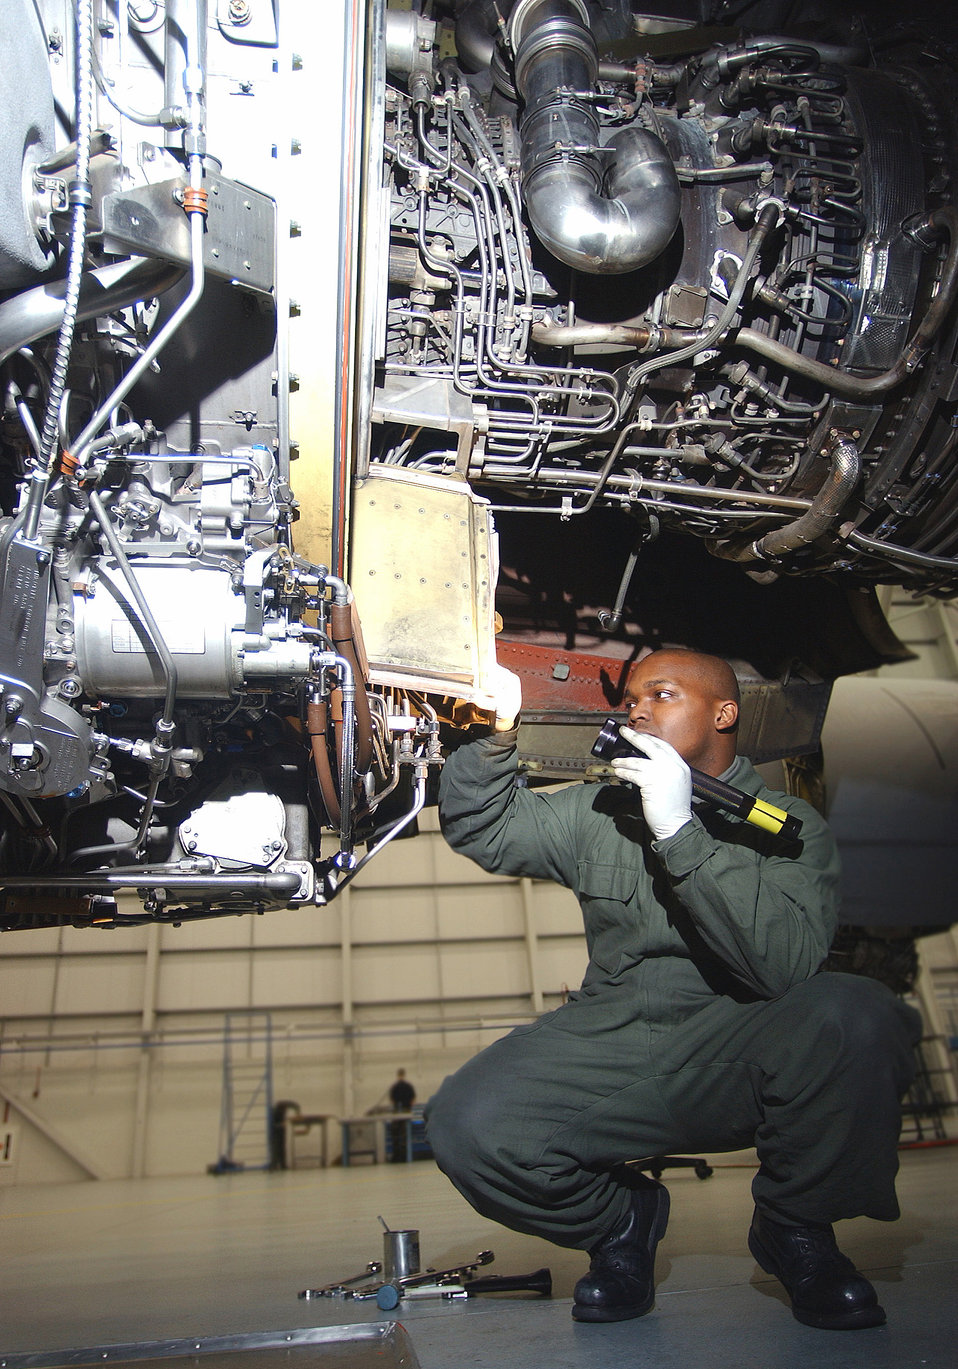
Engine check

ROYAL AIR FORCE MILDENHALL, England (AFPN) -- Staff Sgt. Chris Canada shines a flashlight on hidden areas of a KC-135 Stratotanker engine to inspect and assess damage during a routine inspection. All 15 aircraft belong to the 100th Air Refueling Wing, RAF Mildenhall, England, and undergo this inspection regularly. Sergeant Canada is assigned to the 100th Maintenance Squadron here.